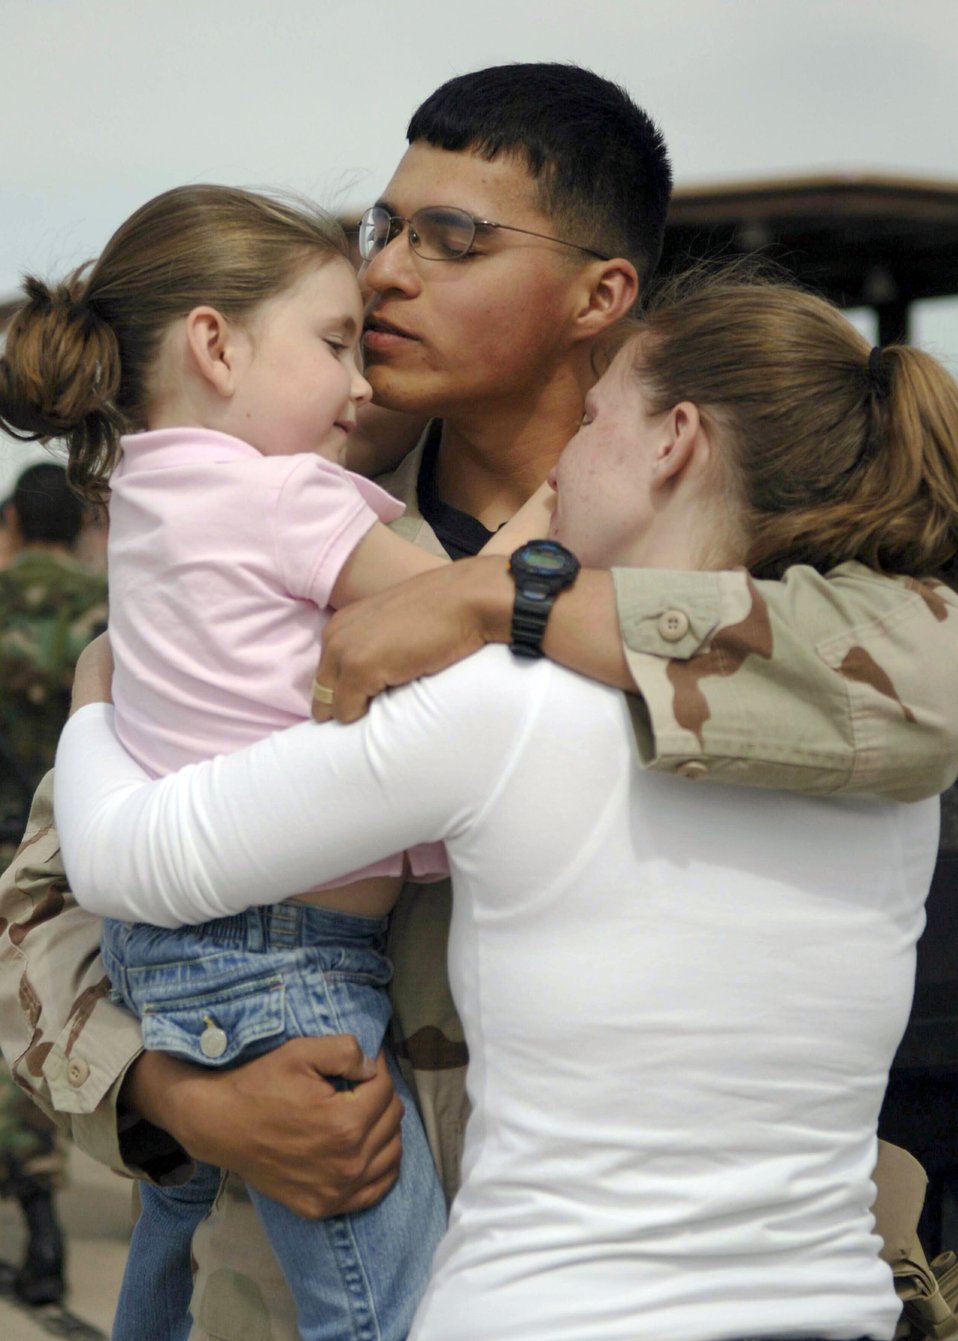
Welcome back to Arizona

Senior Airman Justin Gonzales reunites with his family at Davis-Monthan Air Force Base, Ariz., Friday, March 17, 2006, as he returns from his deployment. The 355th Security Forces Squadron was deployed to Camp Bucca, Iraq, for nine months in support of Operation Iraqi Freedom.